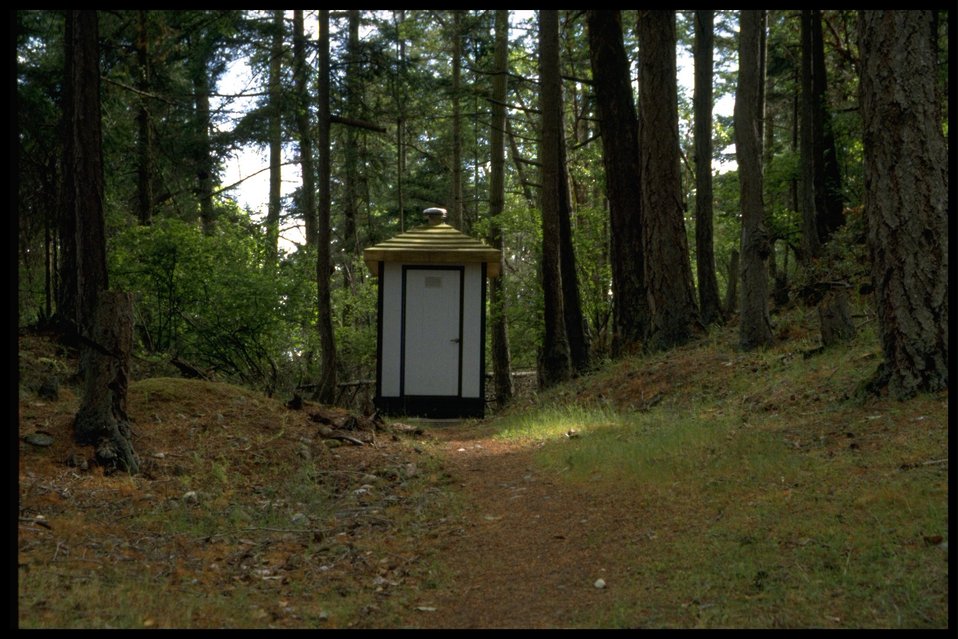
Compost vaulted toilet at Turn Point.